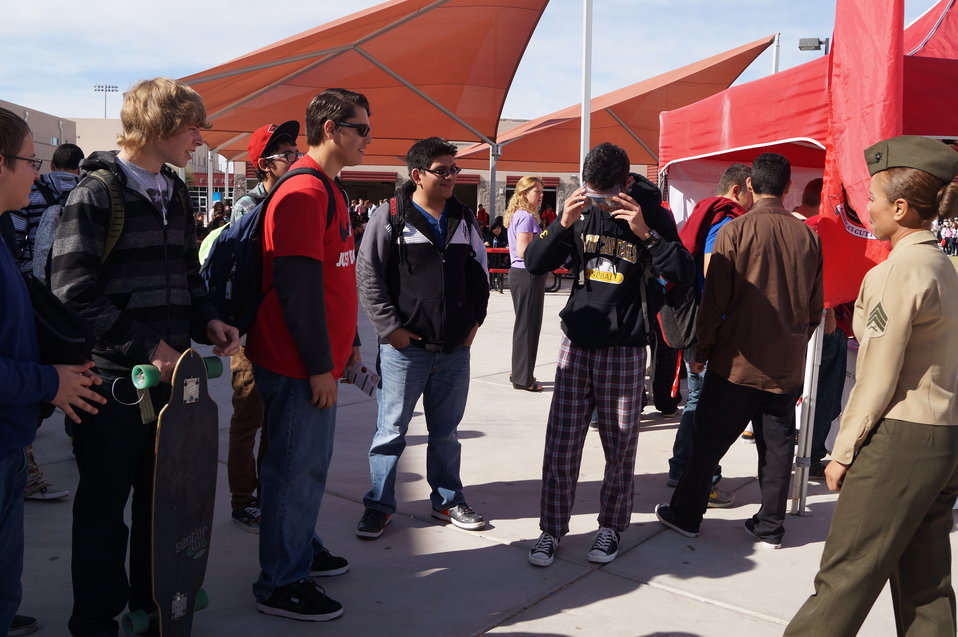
National Drug Facts Week - GILA RIDGE HS

The Drug Demand Reduction Program out of Yuma Arizona held numerous events at local schools to support NIDA's National Drug Facts Week, Jan. 27-Feb. 2 2014. Teens participated in drug awareness games, and helped to Shatter the Myths about teen substance abuse.